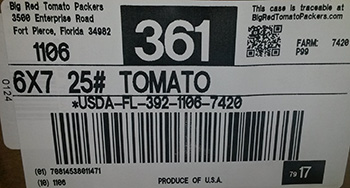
RECALLED – Big Red

February 10, 2014 – Product Recall – Big Red Tomato Packers, LLC Voluntarily Recalls Fresh Tomatoes Due to Possible Risk of Contamination from Salmonella .